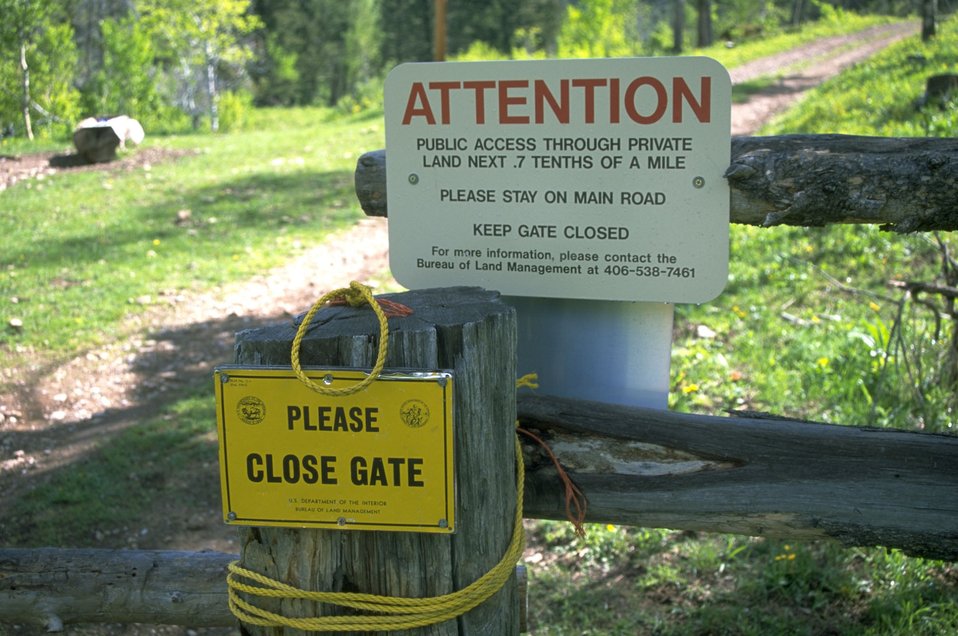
Information signs in LimeKiln Canyon